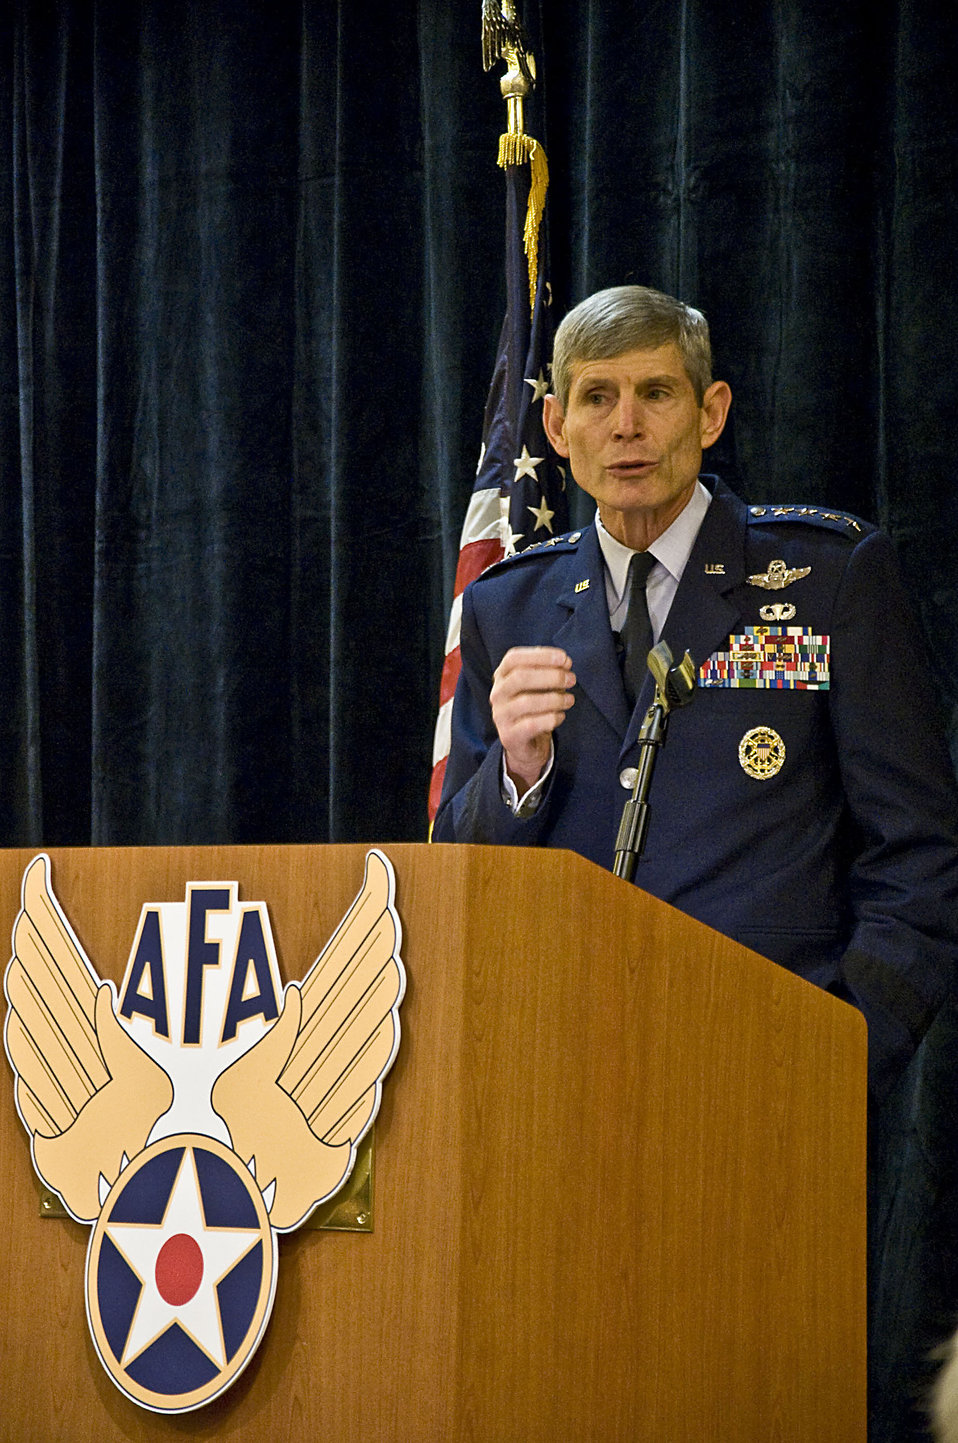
CSAF: Balance required to avoid a ‘hollow force’

Air Force Chief of Staff Gen. Norton A. Schwartz speaks about rebalancing the total force during an Air Force Association monthly breakfast in Arlington, Va., June 11, 2012. The Air Force Association's breakfast program is a monthly series that provides a venue for senior Air Force and Department of Defense leaders to communicate directly with the public and the press.